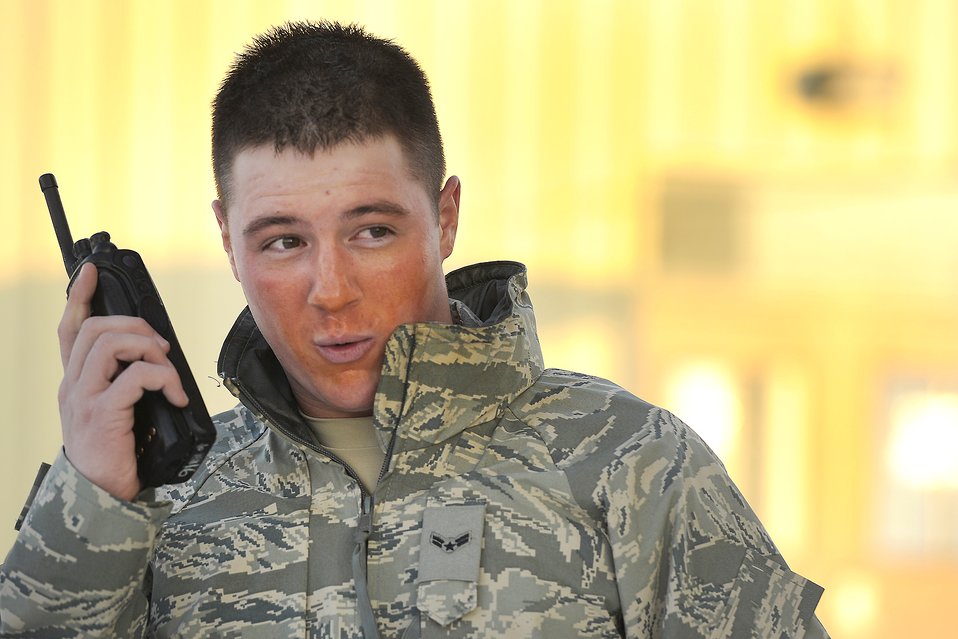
Oleoresin Capsicum spray training

Airman 1st Class Zack Meanor simulates calling in a report of being attacked by an assailant after being sprayed in the face with Oleoresin Capsicum spray Jan. 5, 2011, at Hill Air Force Base, Utah. OC spray is a non-lethal spray, similar to pepper spray, used to temporarily incapacitate individuals. All security forces Airmen receive the OC training when they first arrive at their squadron. Airman Meanor is assigned to the 75th Security Forces Squadron.